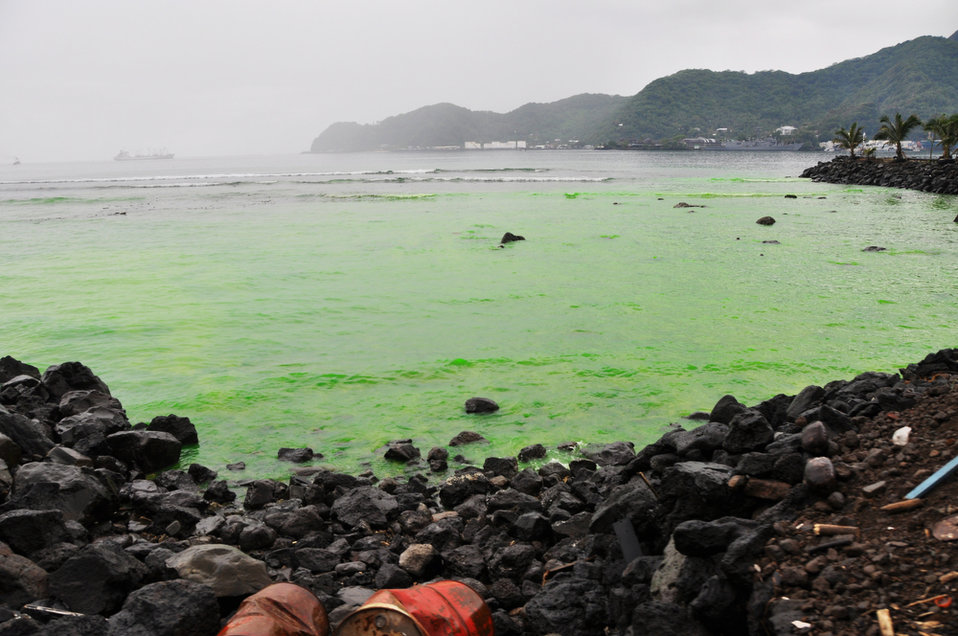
Hawaii Guard members assess damages in American Samoa

A contaminated area of the shoreline areas has turned green as of Oct. 1, 2009, in Pago Pago, American Samoa. The island nation was struck Sept. 29 by an 8.3 magnitude earthquake generating 15-foot waves and destroying whole villages.